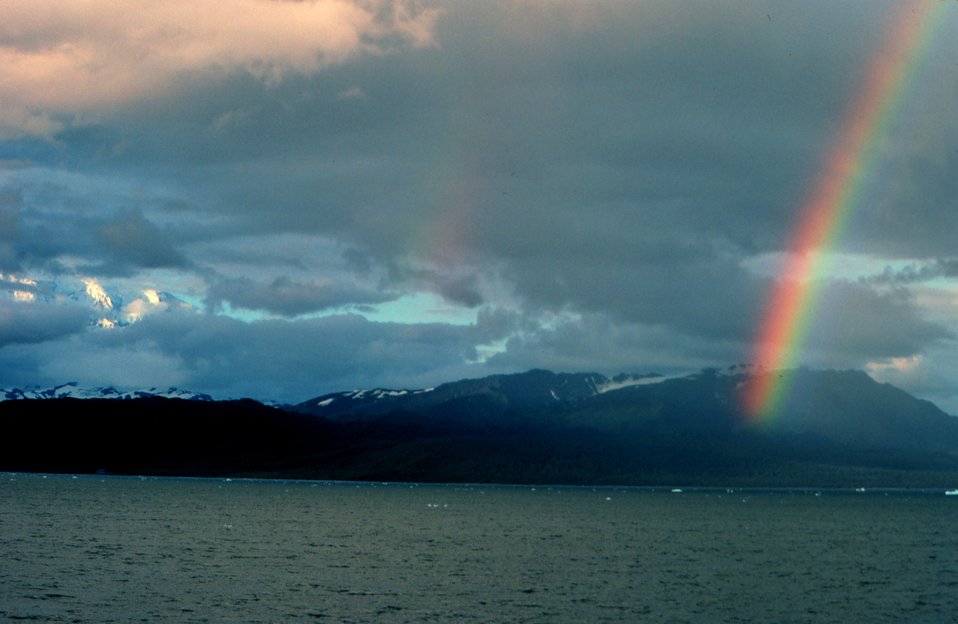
A rainbow somewhere along the Alaska Peninsula.